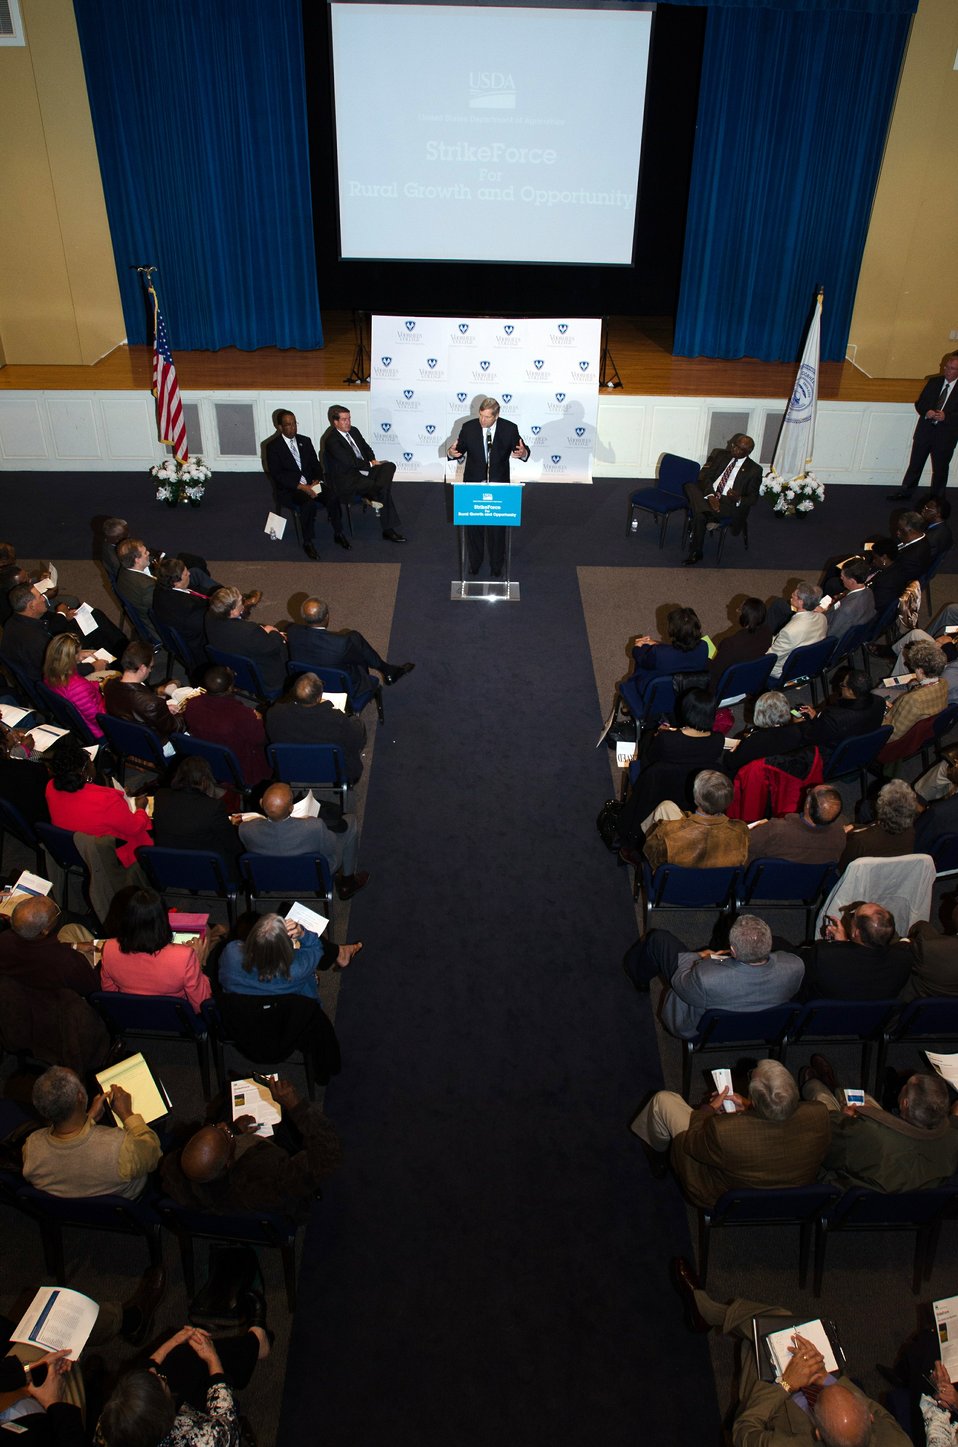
vAgriculture Secretary Tom Vilsack speaks at the U.S. Department of Agriculture's (USDA) Strike Force for Rural Growth and Opportunity event held at Voorhees College in Denmark, SC, on Tuesday, March 26, 2013. The primary goal of the Strike Force initiative is to increase partnership with rural communities and leverage community resources in targeted, persistent poverty areas. Vilsack noted that through the Strike Force initiative, USDA will do more to partner with local and state governments and community organizations on projects that promote economic development and job creation.